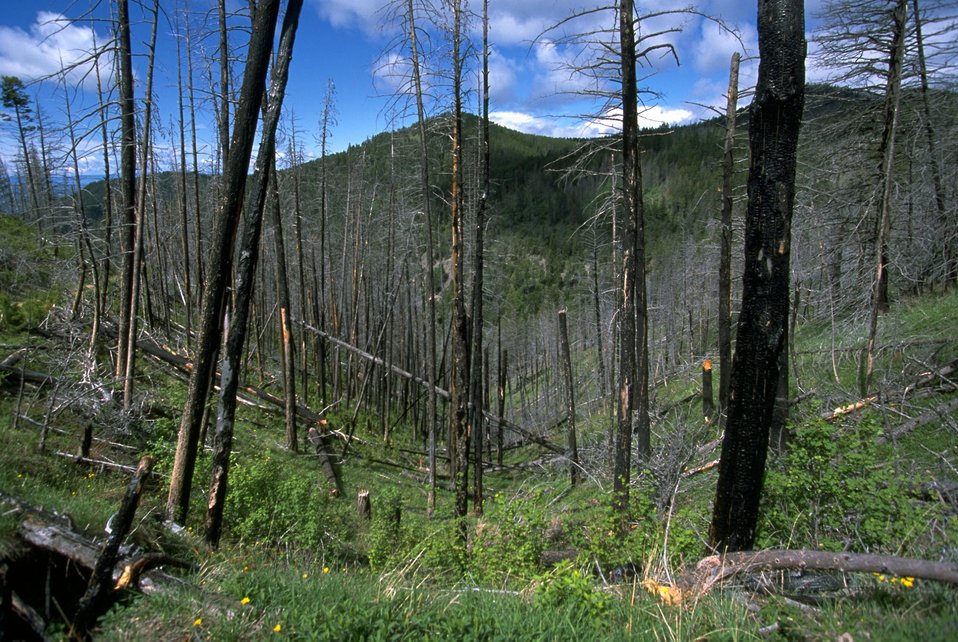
An old burn area in the Judith Mountains